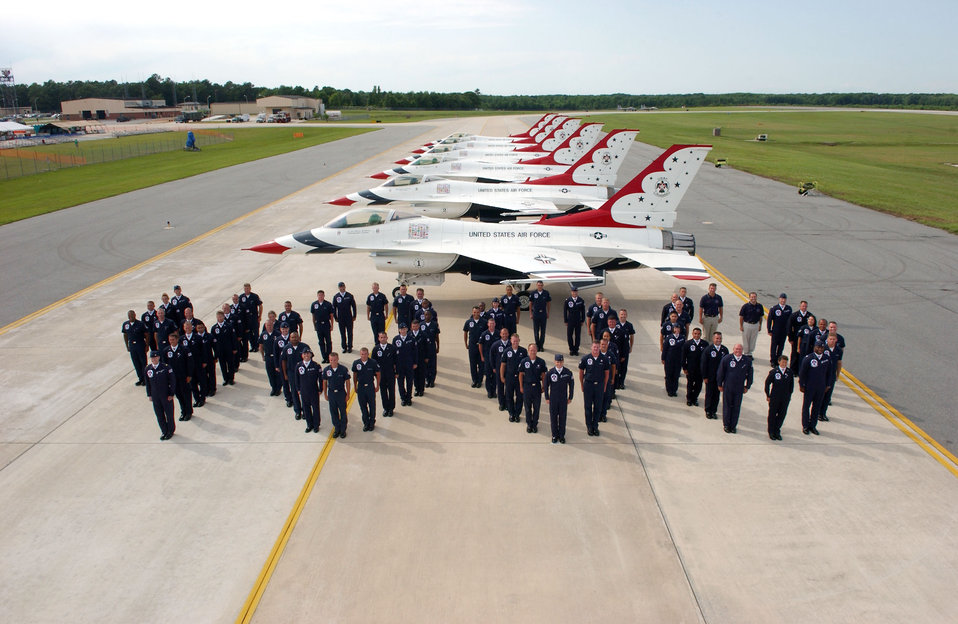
Thunderbirds perform 4,000th show

Airmen from the United States Air Force Air Demonstration Squadron, the Thunderbirds, line up to form the number 4,000 to commemorate the team's milestone air show on Saturday, May 13, 2006.